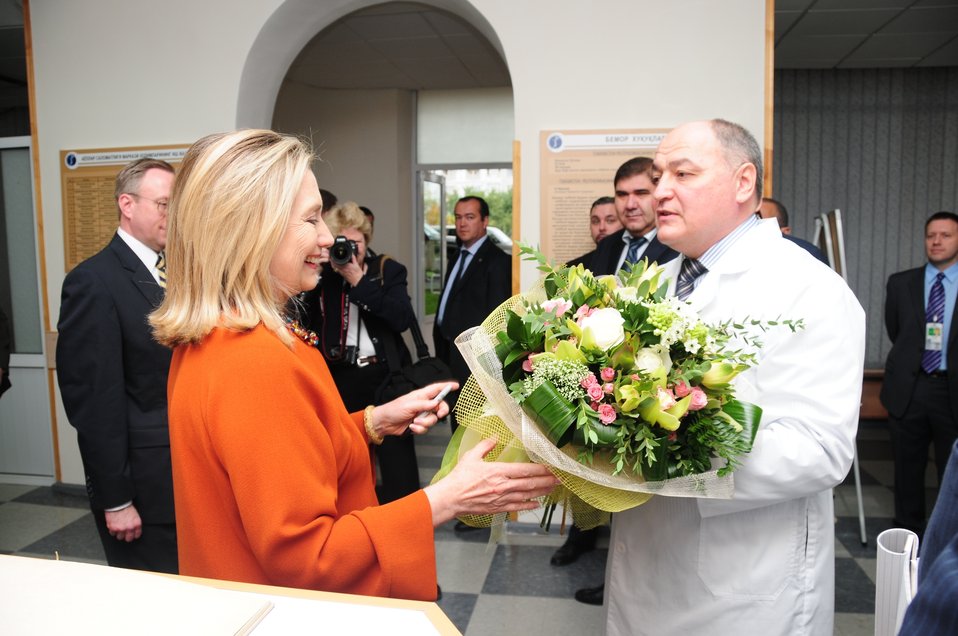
Secretary Clinton Receives Flowers From Women's Wellness Center Staff

U.S. Secretary of State Hillary Rodham Clinton receives flowers from Dr. Dilmurod, Director of the Wellness Center, on behalf of the Women’s Wellness Center in Tashkent, Uzbekistan, on October 23, 2011.